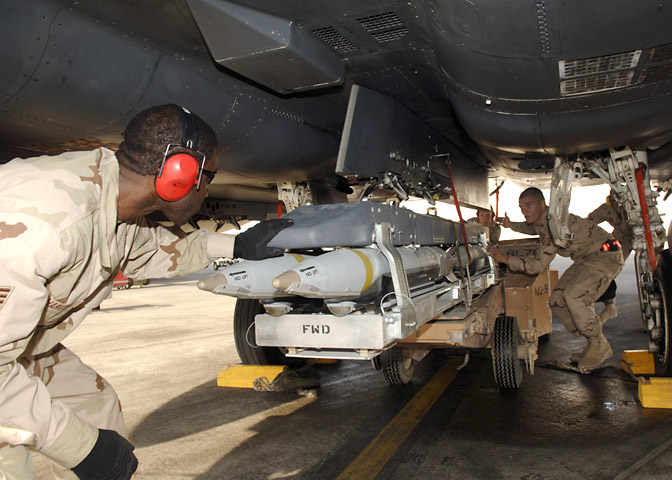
Small diameter bomb makes combat debut

Staff Sgts. Kevin Harvey and Chace Morris and Airman 1st Class Amanda Hicks, weapons load team members from the 379th Expeditionary Aircraft Maintenance Squadron upload a weapons carriage with GBU-39/B small diameter bombs to the underside of an F-15E Strike Eagle. The jet flew its first sortie carrying the new munition into combat Oct. 5. The Airmen are deployed from Royal Air Force Lakenheath, England.